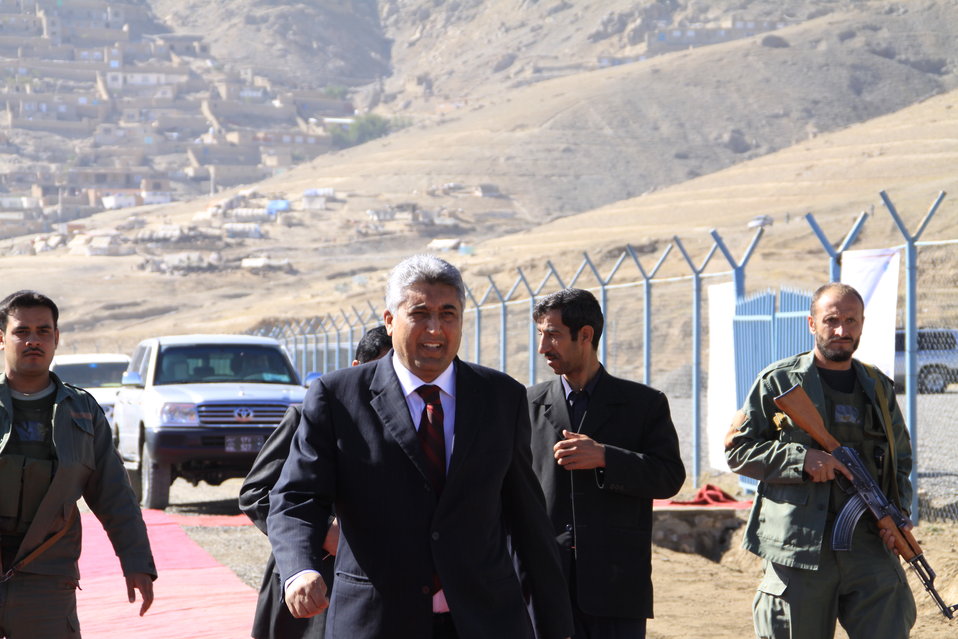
AVIPA Plus Wheat Seed Distribution 101005

US Ambassador Karl Eikenberry and USAID Acting Mission Director Kevin Brownawell joined the Minister of Agriculture, Irrigation and Livestock, H.E. Minister Mohammed Rahimi in signing a Memorandum of Understanding and distributing vouchers to area farmers for wheat and fertilizer.